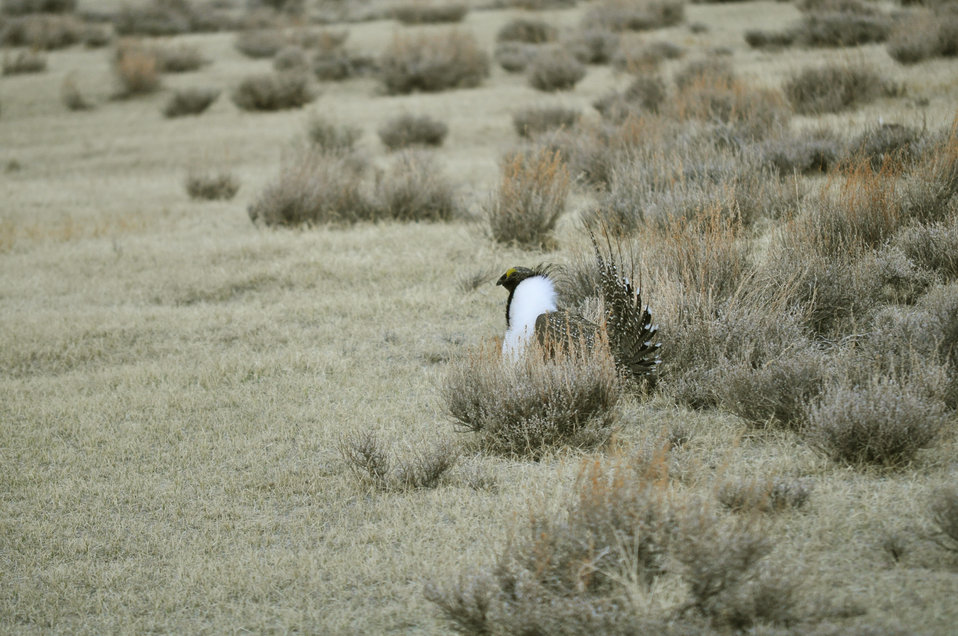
Male greater sage-grouse struts at lek (dancing or mating grounds) to attract females near Bodie, California.